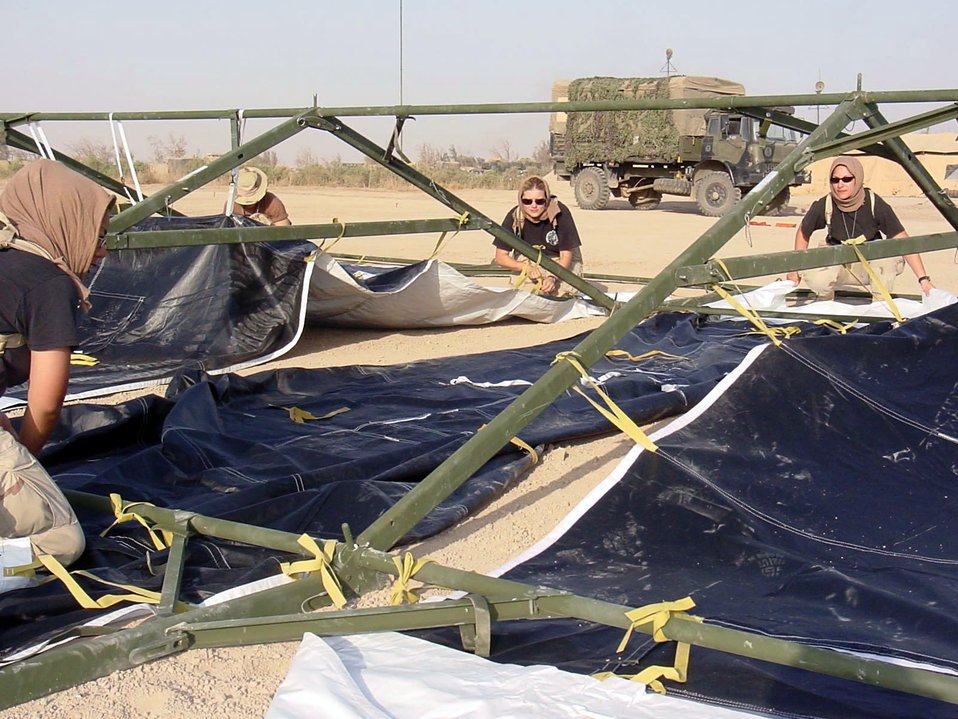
Tallil tents

OPERATION IRAQI FREEDOM -- Airmen build themselves a home at Tallil Air Base in southern Iraq on April 24. The airmen are deployed from Eglin Air Force Base and members of the